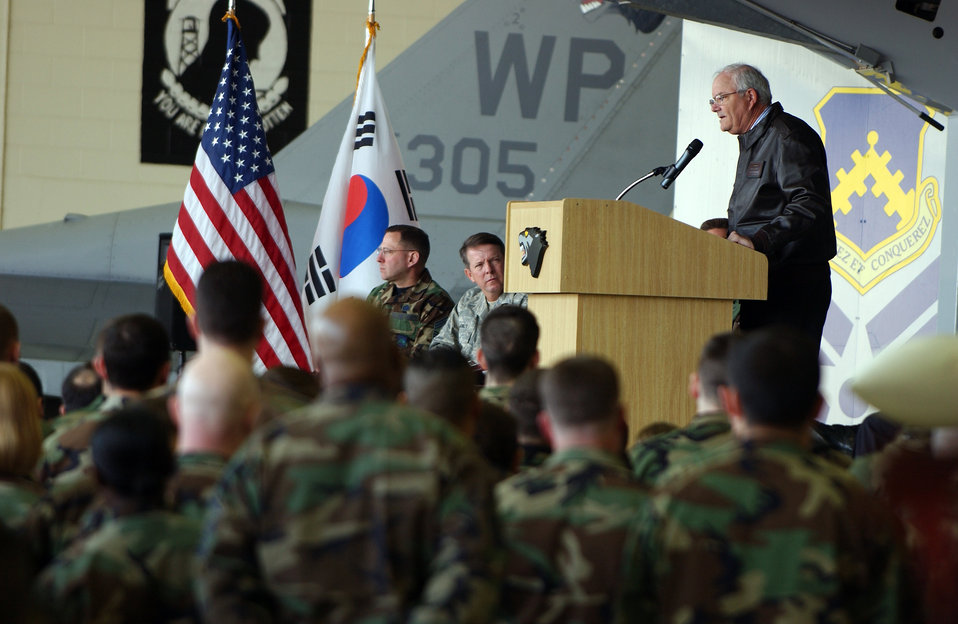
SECAF visits Kunsan

Secretary of the Air Force Michael Wynne addresses and fields questions from Airmen during his visit to Kunsan Air Base, South Korea, Wednesday, March 22, 2006.